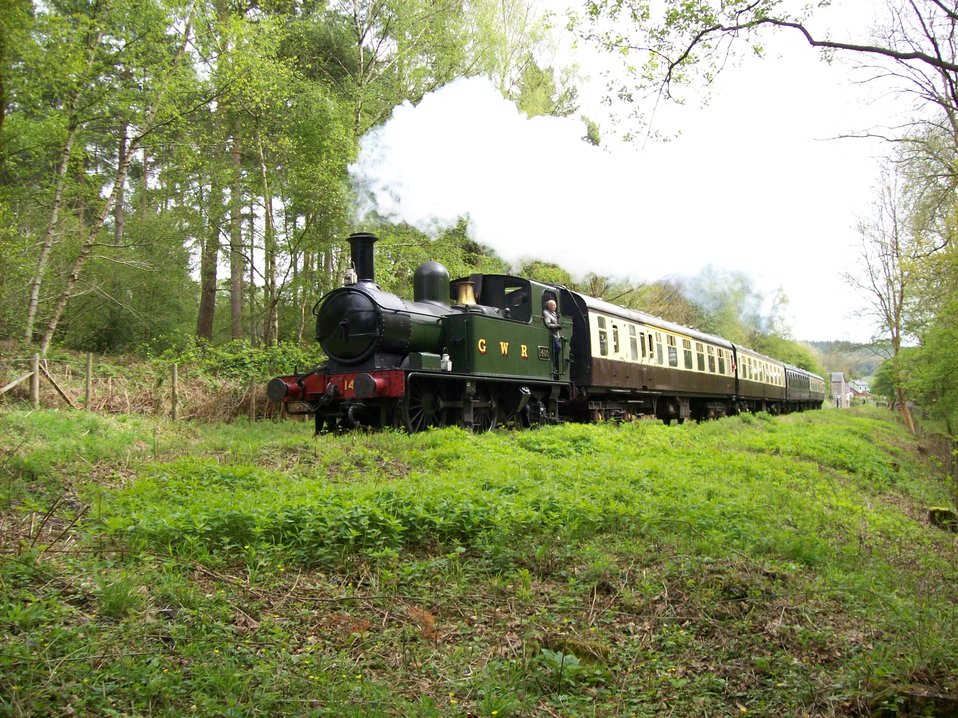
1450 passes through Oakenwood, just north of Whitecroft.